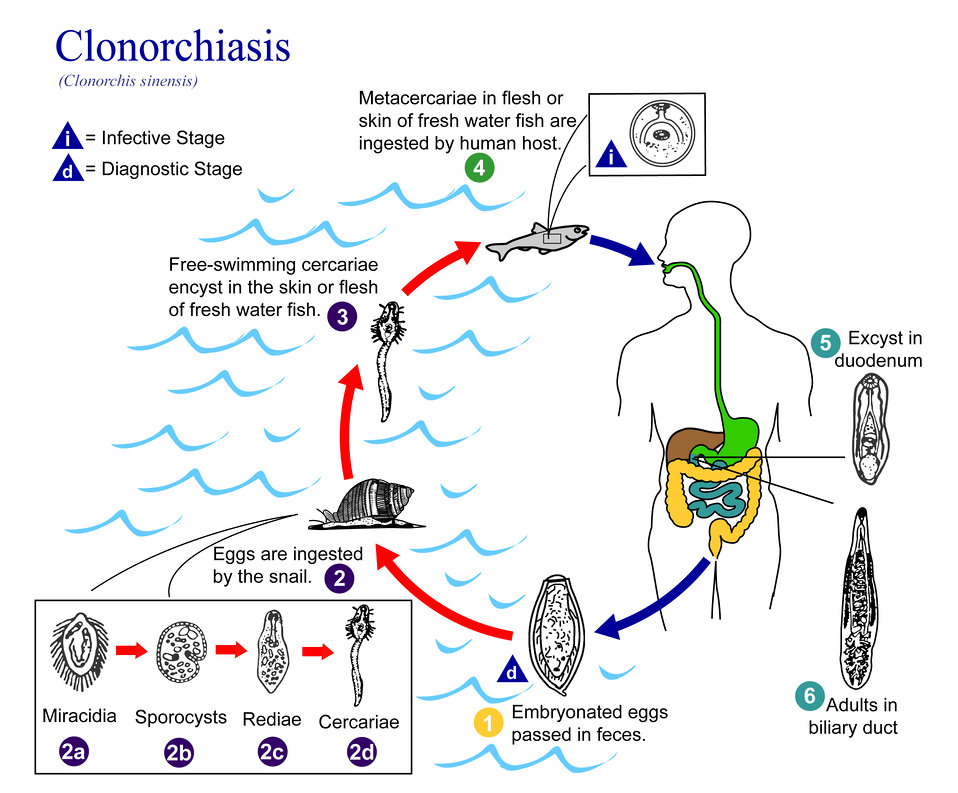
This is an illustration of the life cycle of Clonorchis sinensis, the causal agent of Clonorchiasis.